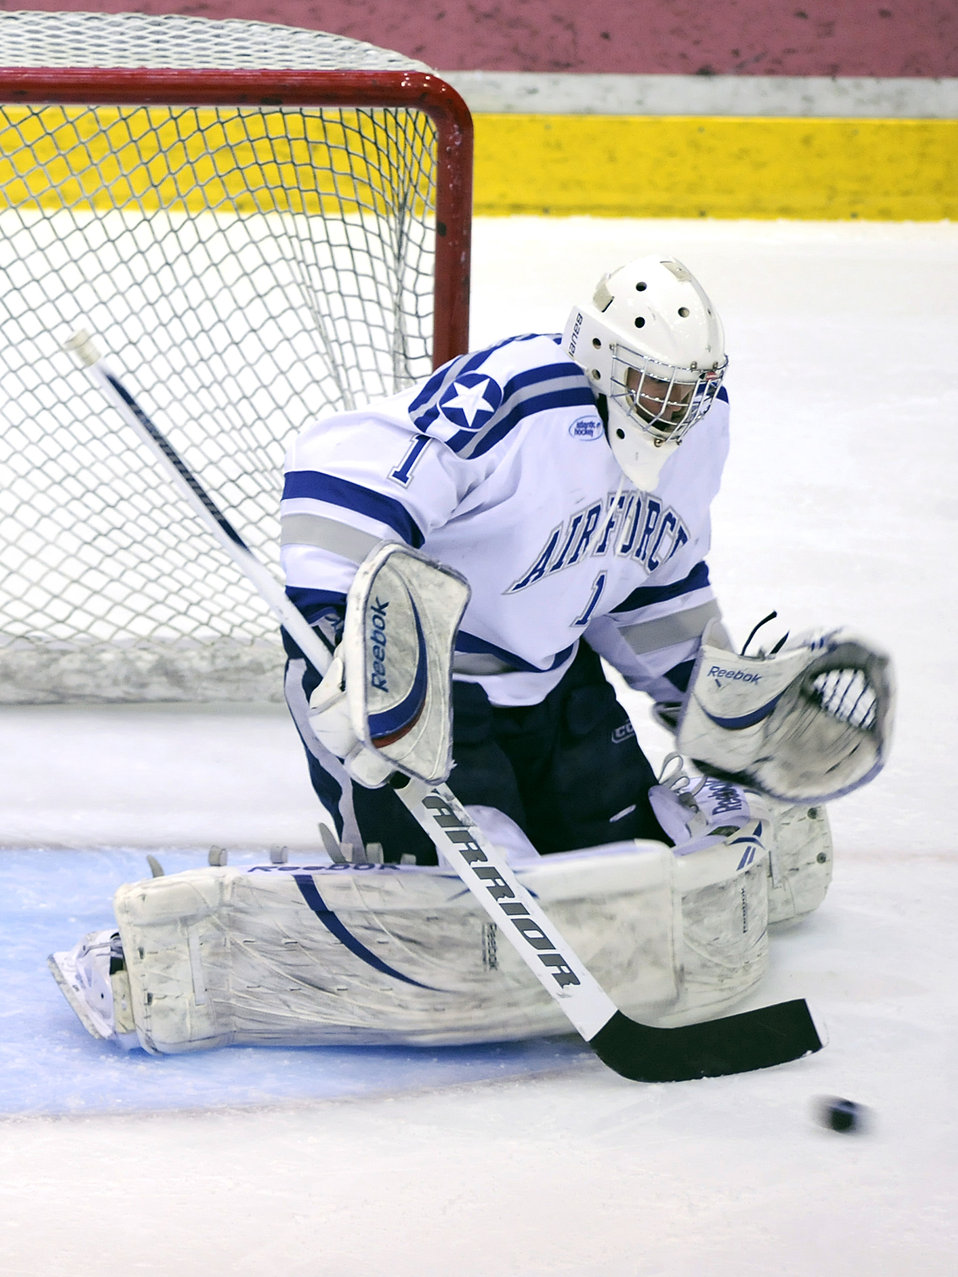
Falcons hockey team beats Pioneers

In his last regular-season game, Falcon senior goalie Andrew Volkening blocks a shot as the Falcons scored a season high eight goals, beating the Sacred Heart Pioneers 8-1 at the U.S. Air Force Academy's Cadet Ice Arena Feb. 27, 2010. The victory clinched third place in the Atlantic Hockey Association, improving to 14-14-6 overall and 14-8-6 in the AHA.